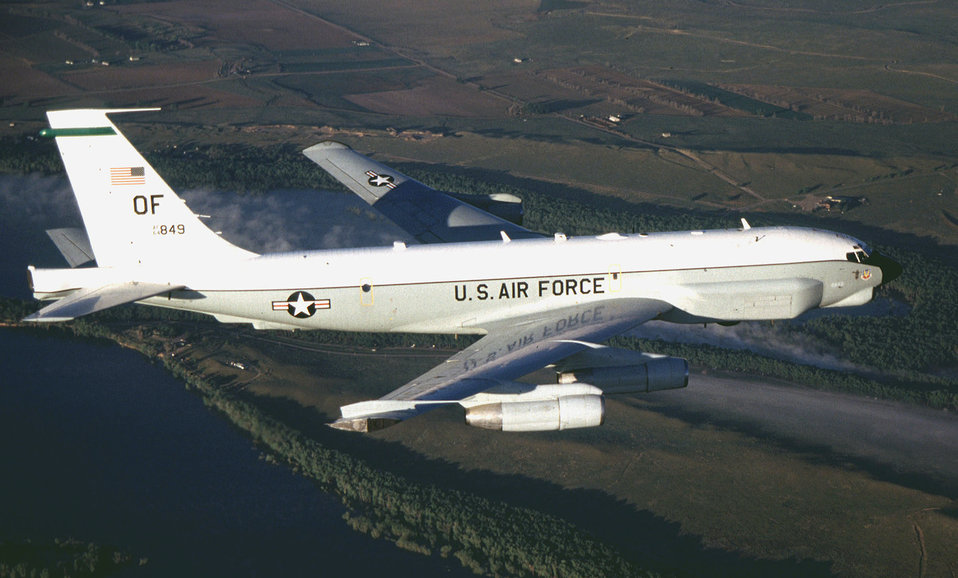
RC-135 U

FILE PHOTO -- The RC-135U Combat Sent, located at Offutt Air Force Base, Neb., provides strategic electronic reconnaissance information to the president, secretary of defense, Department of Defense leaders and theater commanders.